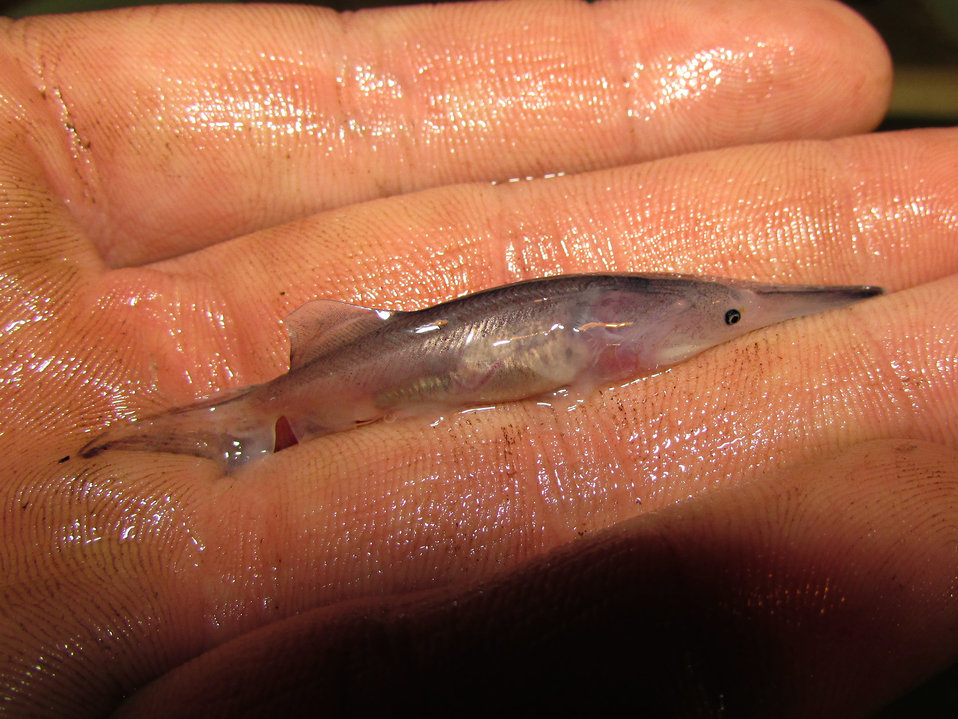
30 Days Old

One of the paddlefish at 30 days old.